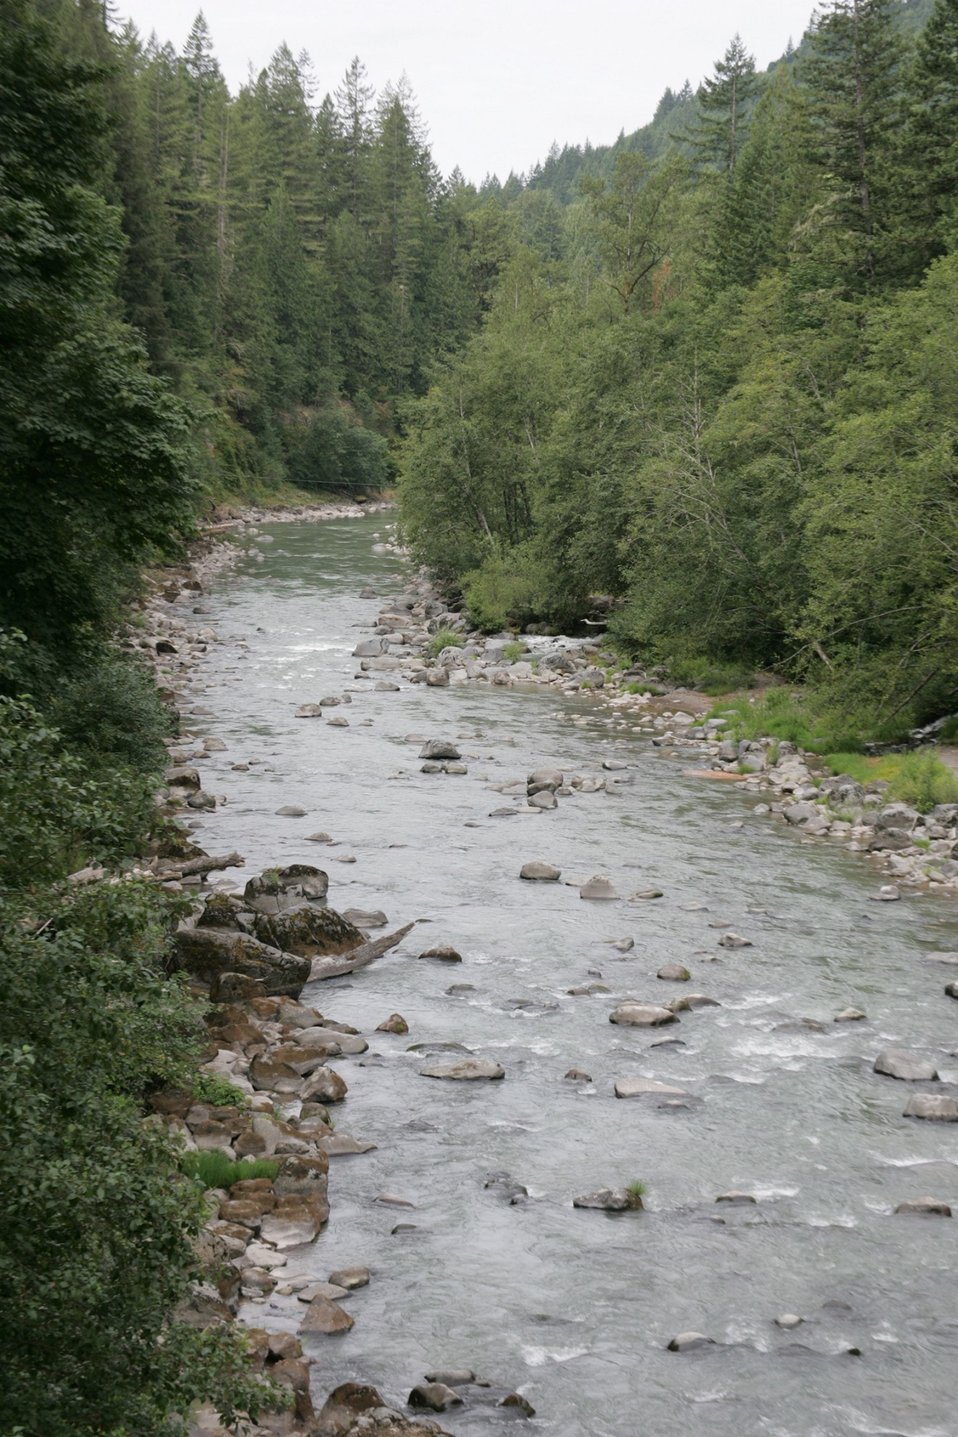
Sandy River just below Marmot Dam. The dam will be removed in 2006..